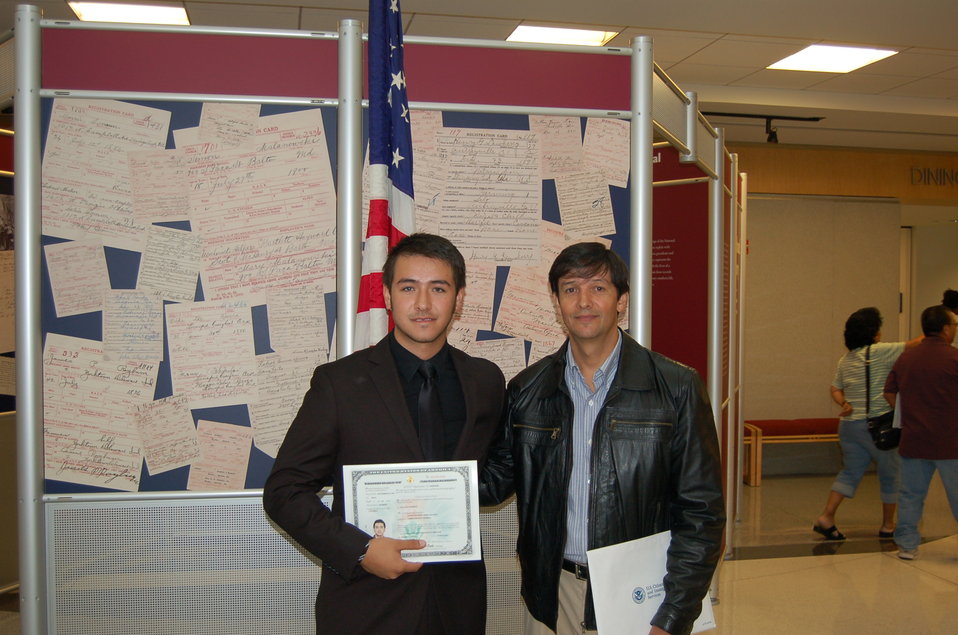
New Citizens